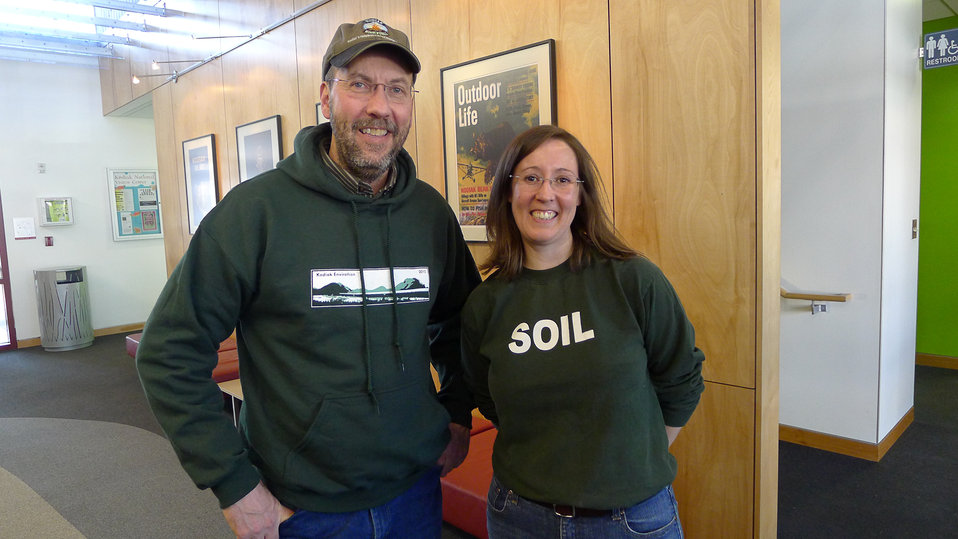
Envirothon volunteers for the Soil Station

Photo Credit: Lisa Hupp/USFWS
Source: Kodiak NWR
Kodiak Refuge hosts an annual Envirothon natural resources competition for local high school students. We rely on natural resource professionals to host the event stations.